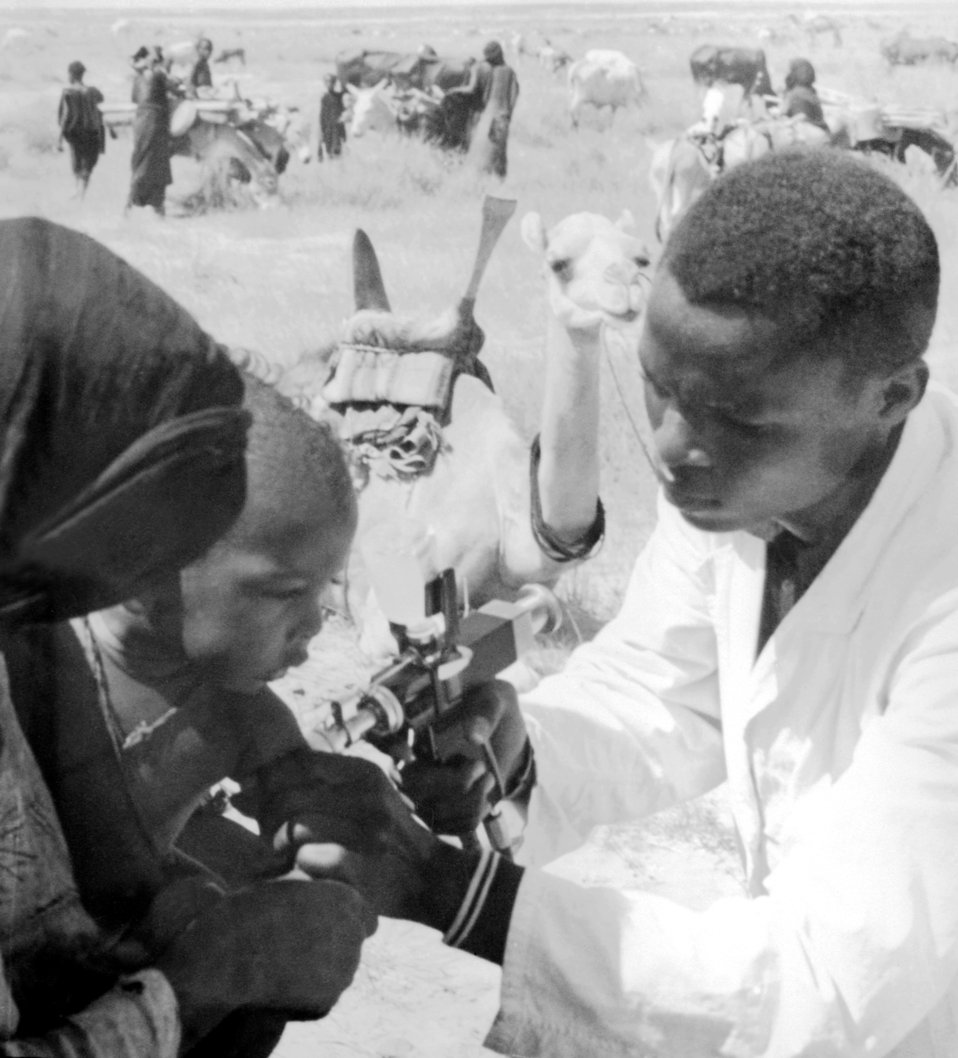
Photograph of a Nigerian child being immunized during the Smallpox Eradication and Measles Control Program of West Africa.